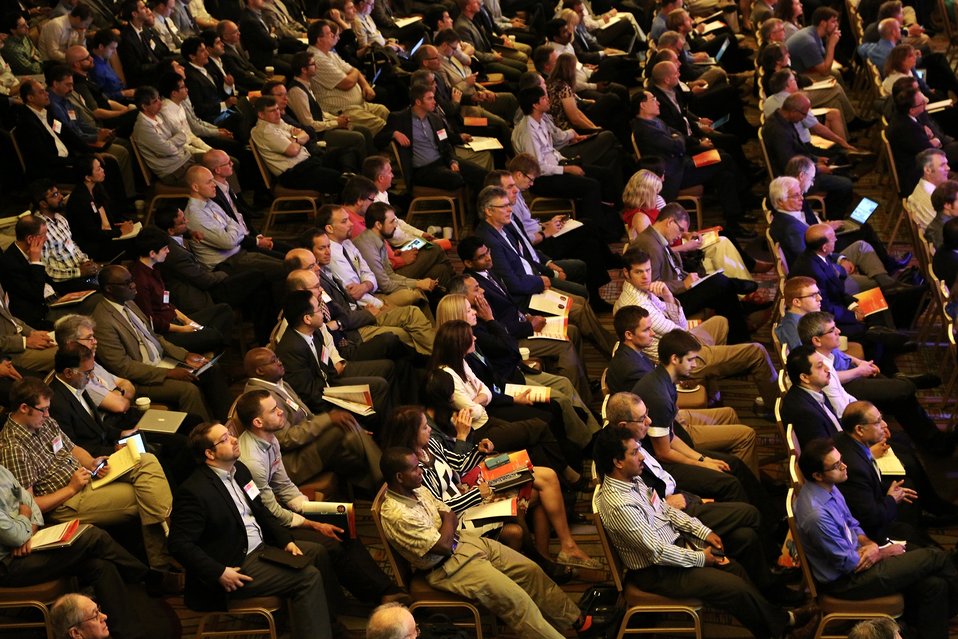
Keynote Session 3

Packed day 3 keynote session.